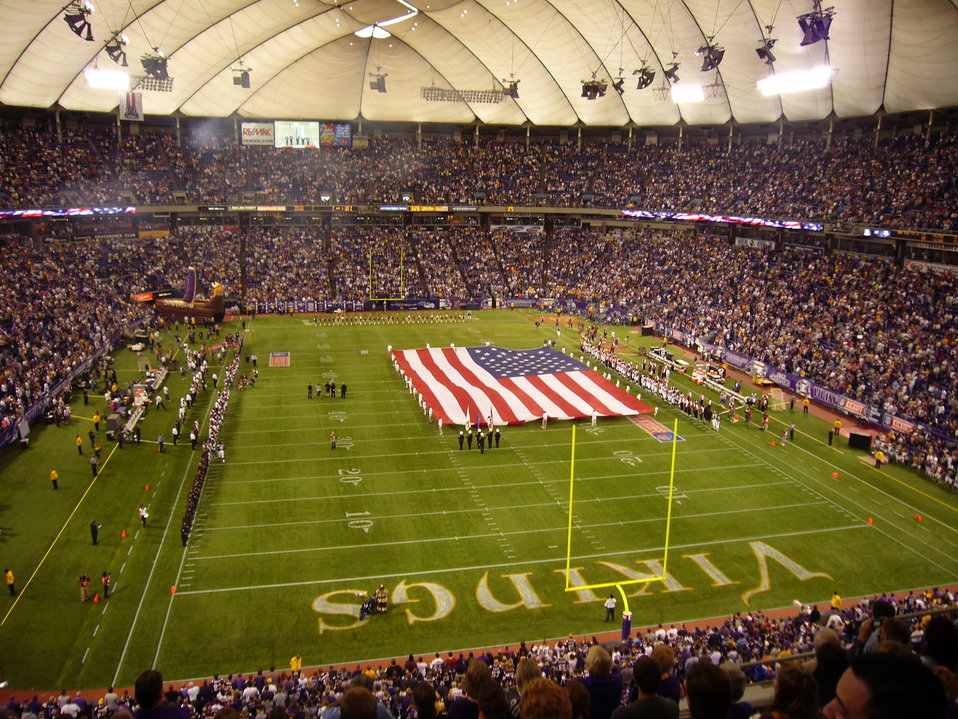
Created by user and released into the public domain.
01:07, 10 September 2007 . . Dlz28 . . 2816×2112 (1.9 MB)